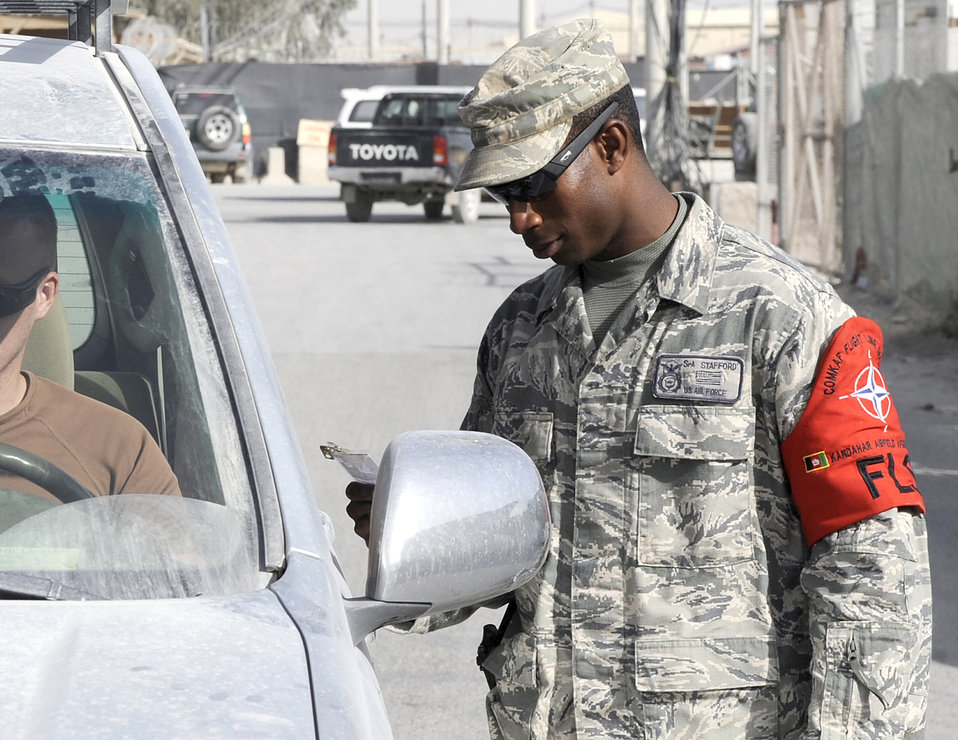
466th AEW flightline security

Senior Airman Kourtlyn Stafford checks a restricted area badge June 3, 2011, at Kandahar Airfield, Afghanistan. ID Airman Stafford is a security forces journeyman assigned to 466th Air Expeditionary Wing Flightline Security Office.